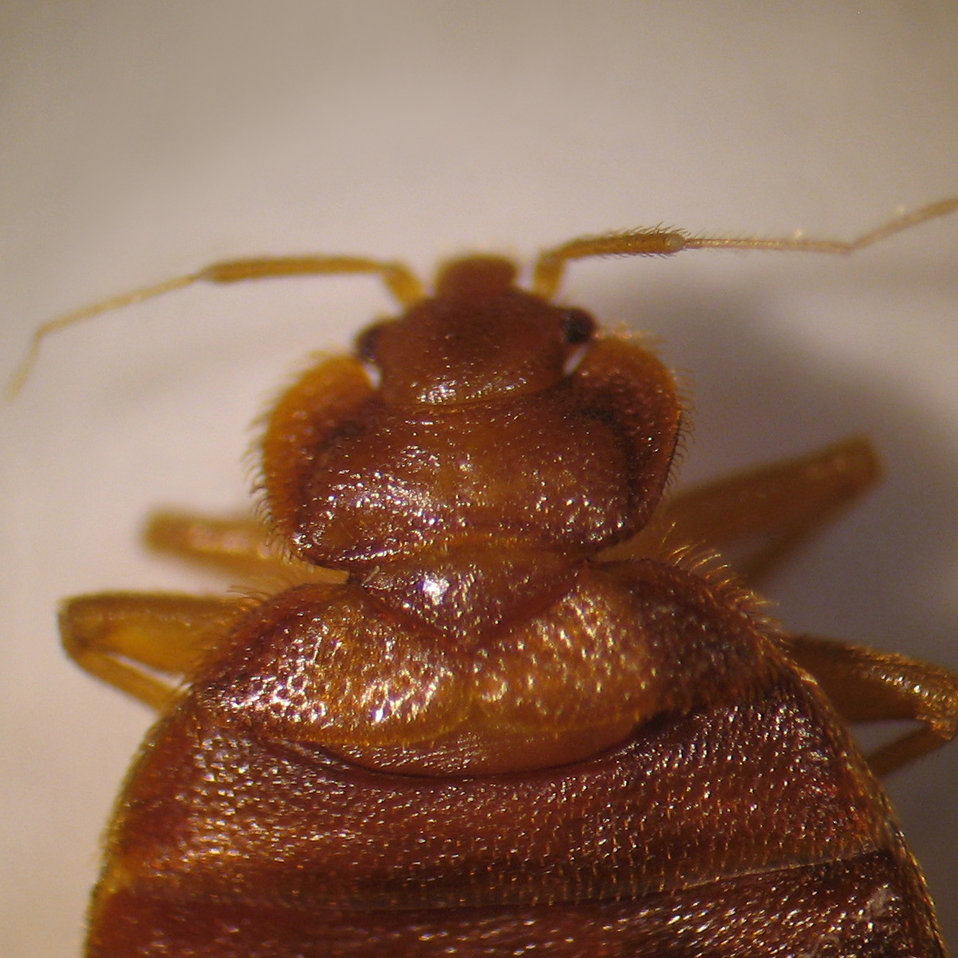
This image depicts a close dorsal view of the head and thorax of an adult, Cimex lectularius bed bug.